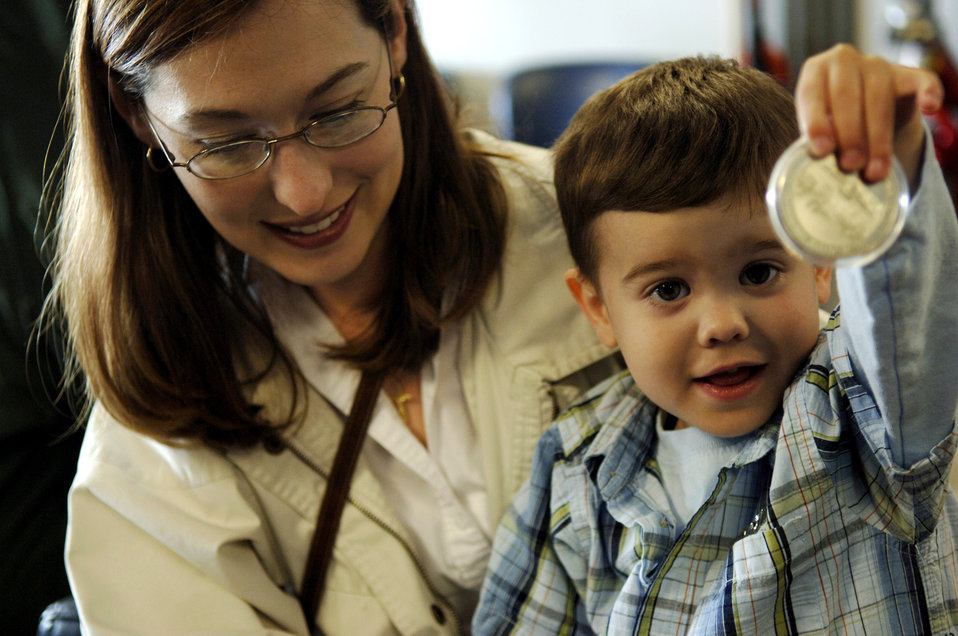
Child becomes pilot for a day at Charleston

Zachary Moore shows off his new 17th Airlift Squadron coin with his mother, Kimberly Moore, April 20 at Charleston Air Force Base, S.C. Zachary received the coin from Maj. Brett King, the assistant director of operations for the 17th Airlift Squadron, during the Pilot for a Day program. Members of the 17th AS chose the 3 year old for the Pilot for a Day program because he was diagnosed with cancer at 18 months. Zachary is the son of Capt. Christopher Moore, the 437th Airlift Wing chief of Public Affairs.